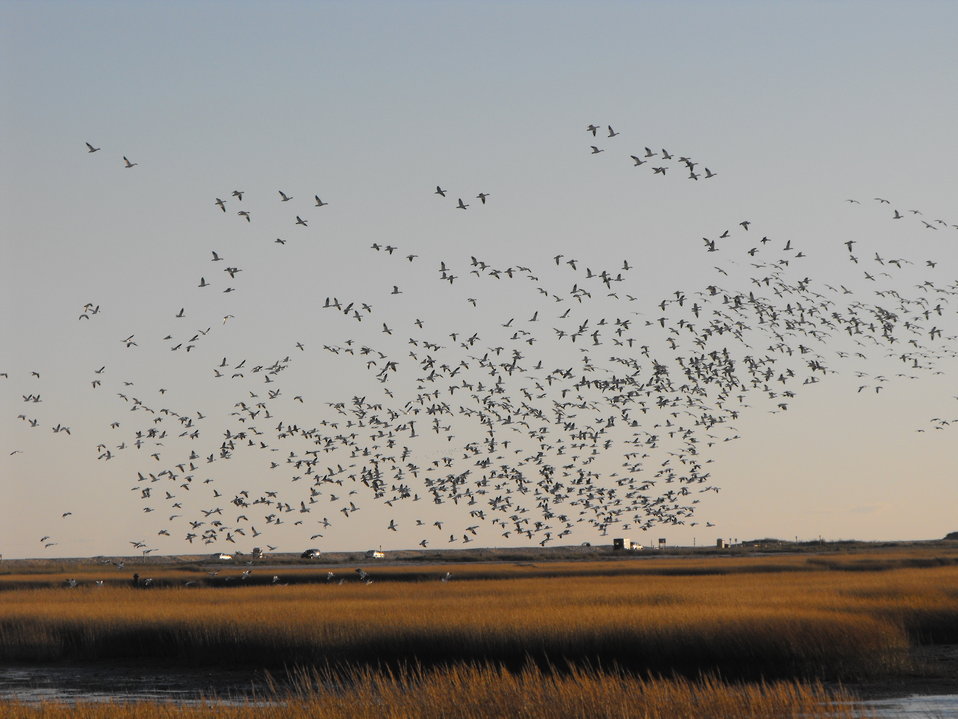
Snow geese take flight over Tom's Cove at Chincoteague National Wildlife Refuge / Assateague Island National Seashore.